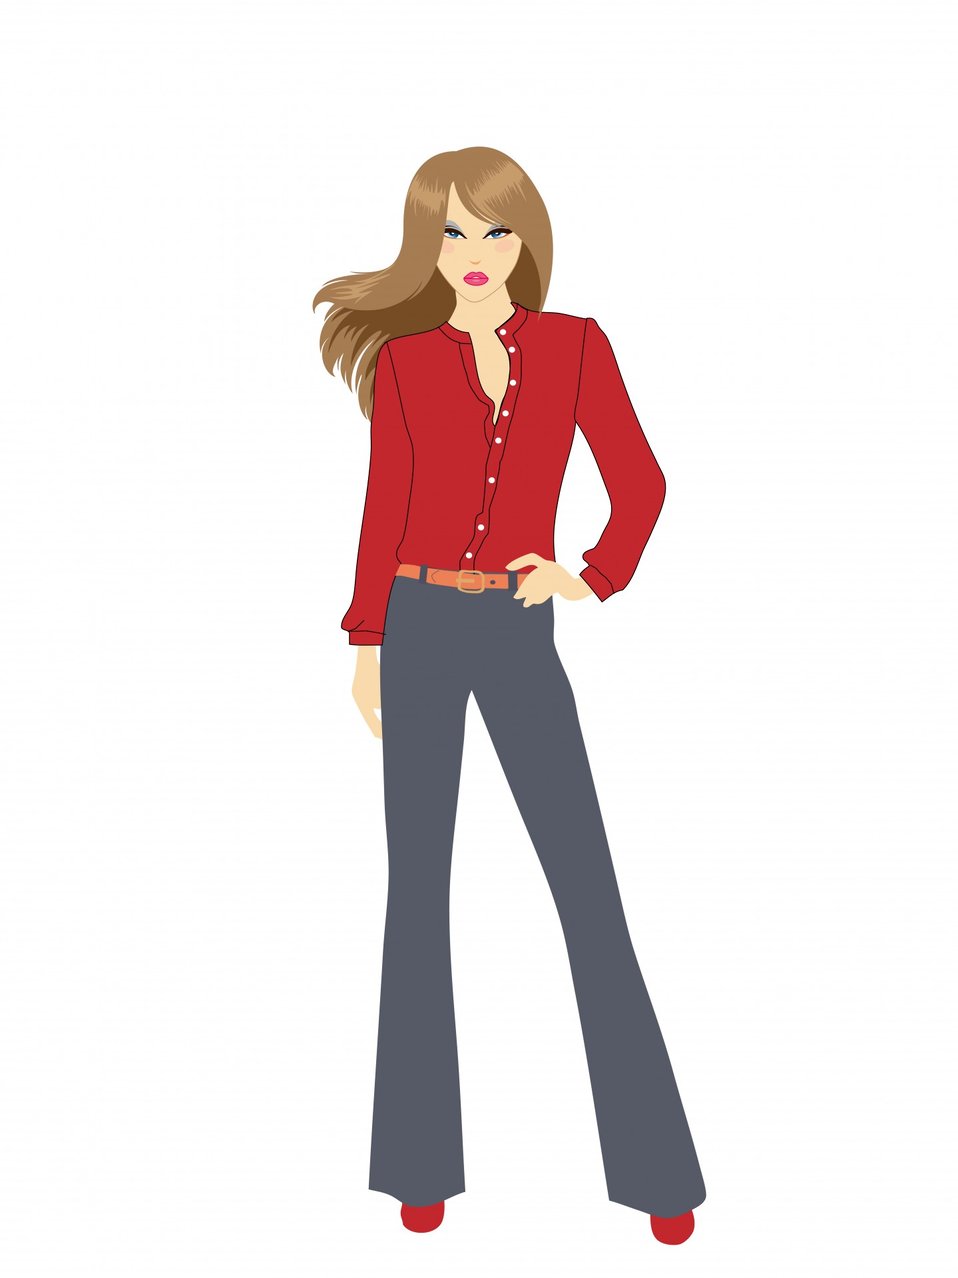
Beautiful woman illustration

Beautiful stylish woman illustration.